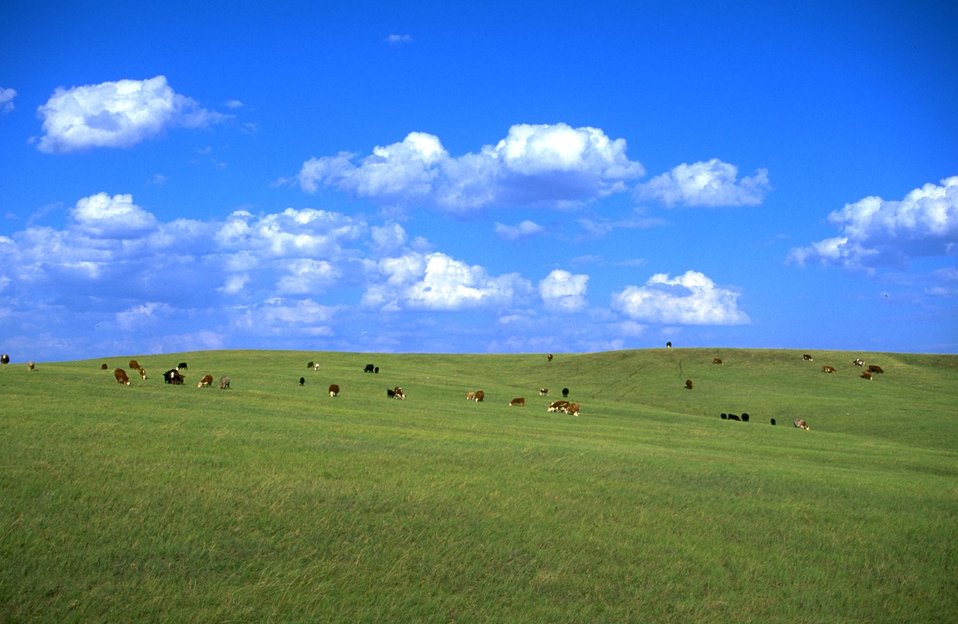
Cattle grazing 45 miles north of Belle Fourche